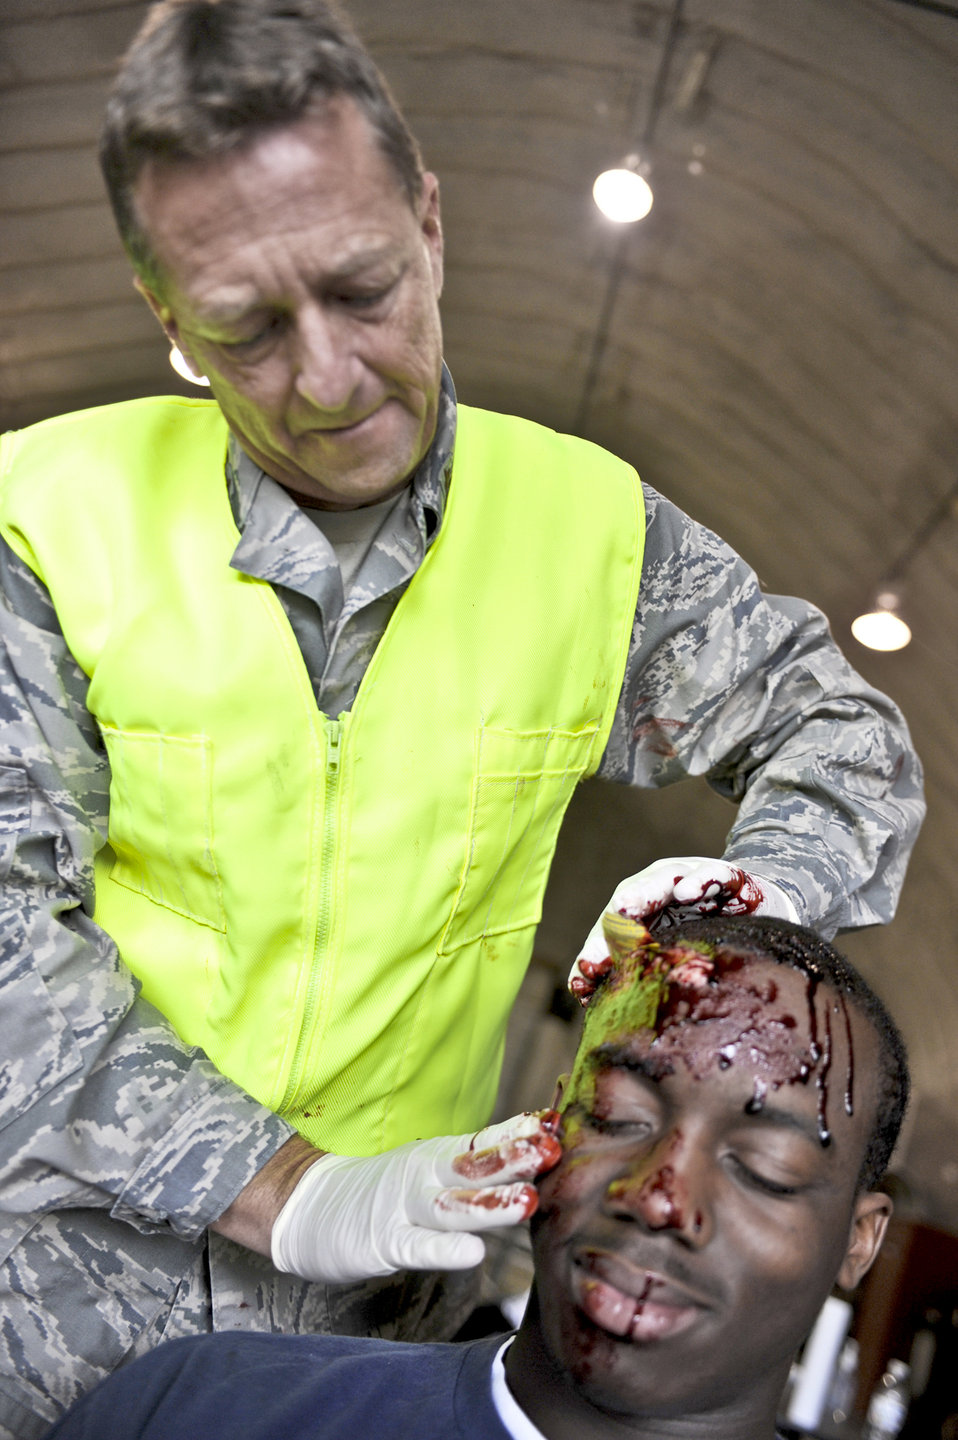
EMED training a first at JBER

Maj. Steven Keifer applies makeup and mock shrapnel to the head of